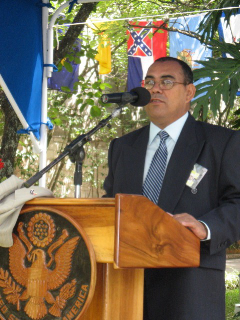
July 4th Celebration at U.S. Embassy in Honduras

Public Affairs Section Staffer Jorge Fonseca conducts a sound check at the U.S. Independence Day celebration at the U.S. Ambassador to Honduras’ residence in Tegucigalpa, Honduras, on July 2, 2010.